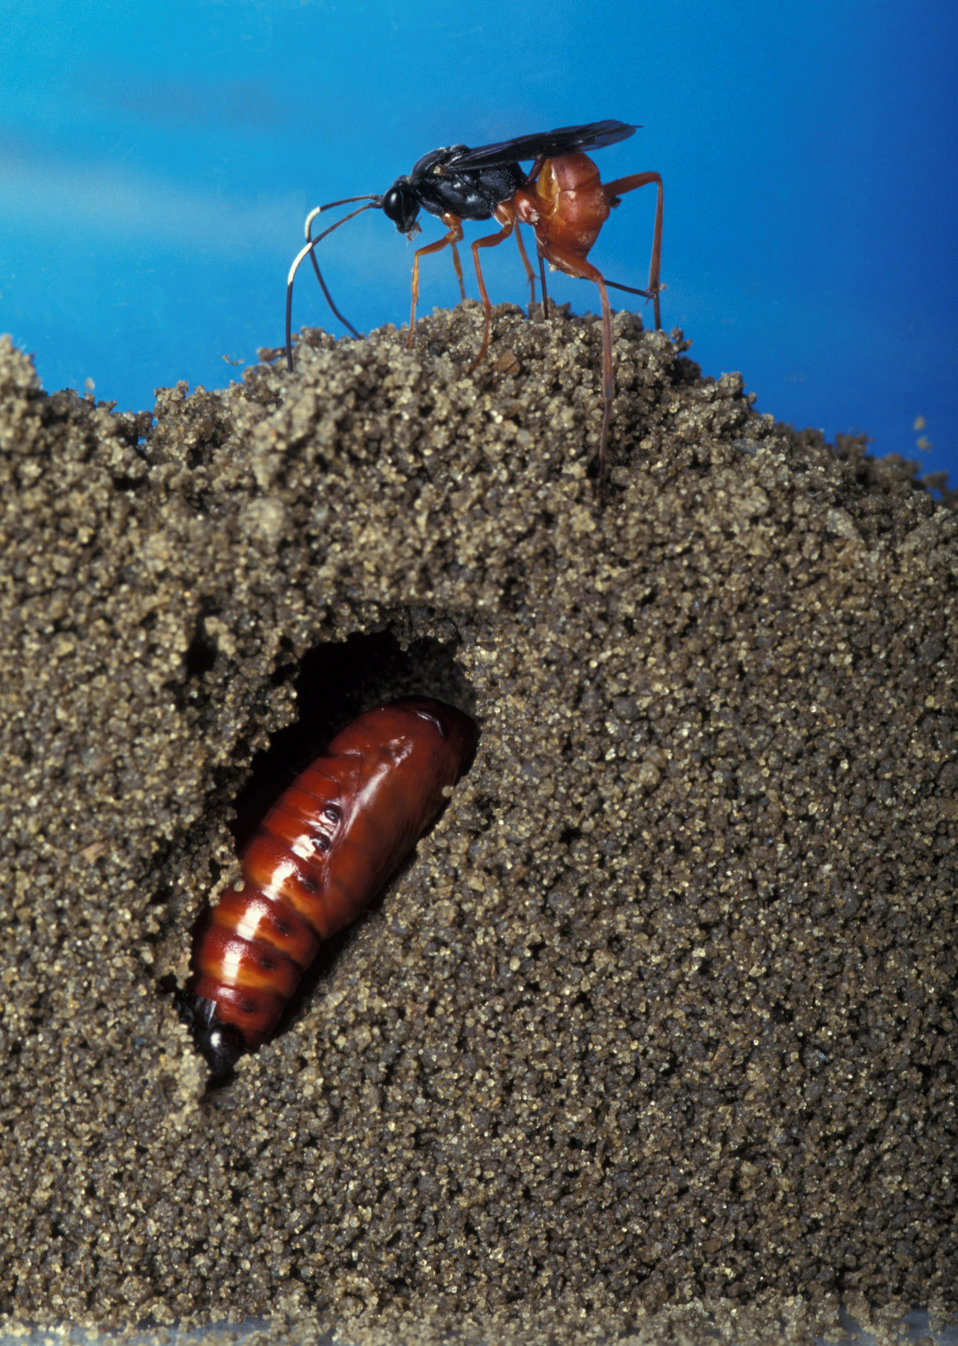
This cross section of a tunnel reveals a corn earworm pupa with a Diapetimorpha introita wasp preparing to lay an egg in the pupal tunnel on May 22, 2003.